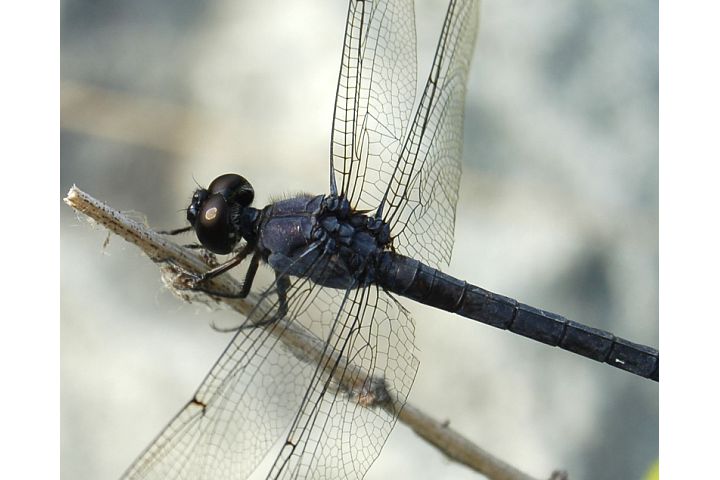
Dragonfly at Patuxent Research Refuge, MD.